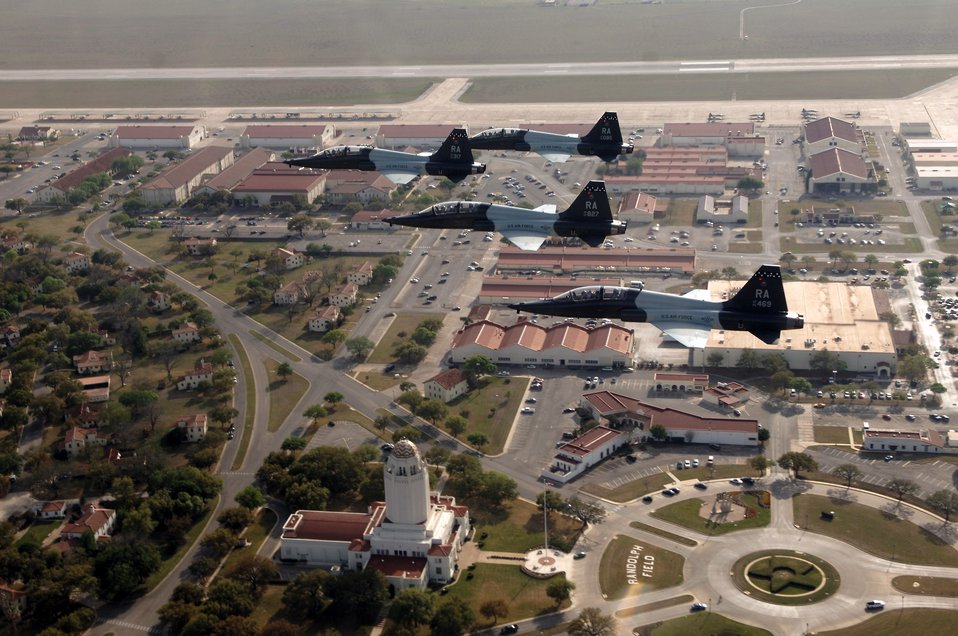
Flying high and free

Four T-38 Talons fly over Randolph Air Force Base, Texas, March 27 for the 35th anniversary reunion of the